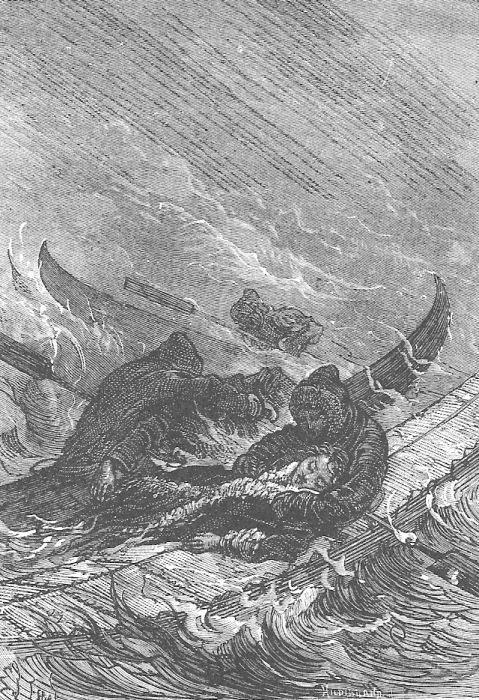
An illustration from Jules Verne's novel 'The Fur Country' (1871-72) drawn by Jules-Descartes Férat or Alfred Quesnay de Beaurepaire. Polski: Ilustracja powieści Juliusza Verne'a 'Wyspa błądząca' (także: 'W krainie białych niedźwiedzi', przekł. dosł.: 'Kraina futer'; 1871-72) autorstwa Julesa-Descartesa Férata lub Alfreda Quesnaya de Beaurepaire'a. Français : Jules Verne: 'Le Pays des fourrures' (1871-72), dessins par Jules-Descartes Férat ou Alfred Quesnay de Beaurepaire. Orginal description from the book: Français : Une main vigoureuse les retirait de l’abîme.